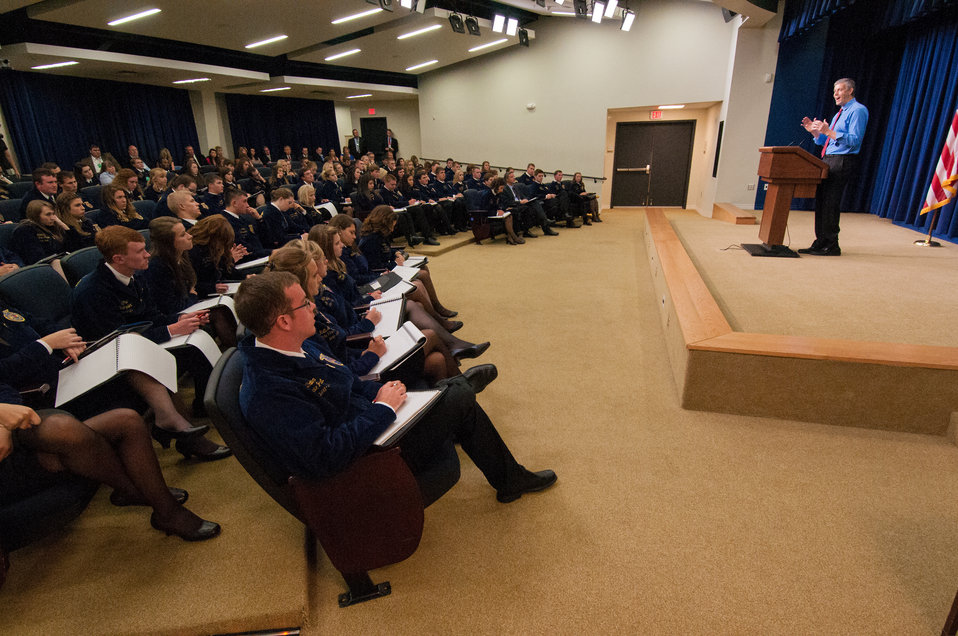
Education Secretary Arne Duncan speaks at a meeting of the White House Rural Council to an audience of the National State President’s Conference of the FFA on Wednesday, Jul. 24, 2013 in Washington, D.C. Secretary Duncan topics related to education and the importance of an education.